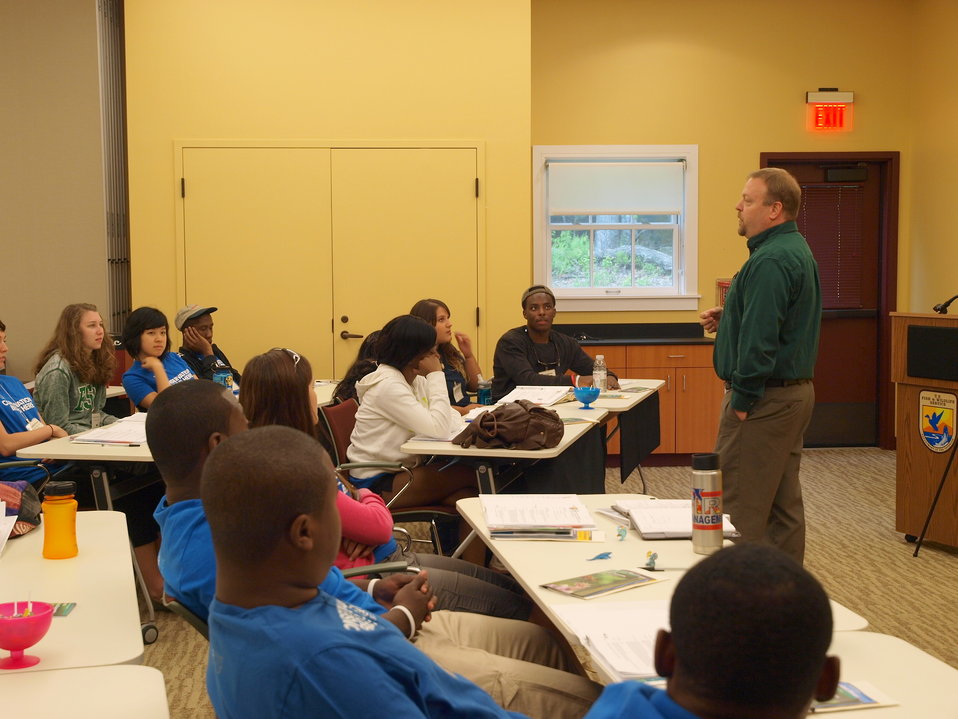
Scott Kahan, the Fish and Wildlife Administrator of The National Wildlife Refuge System speaks to the interns on the first day about the Service and the opportunities that CDIP interns will get out of this experience.